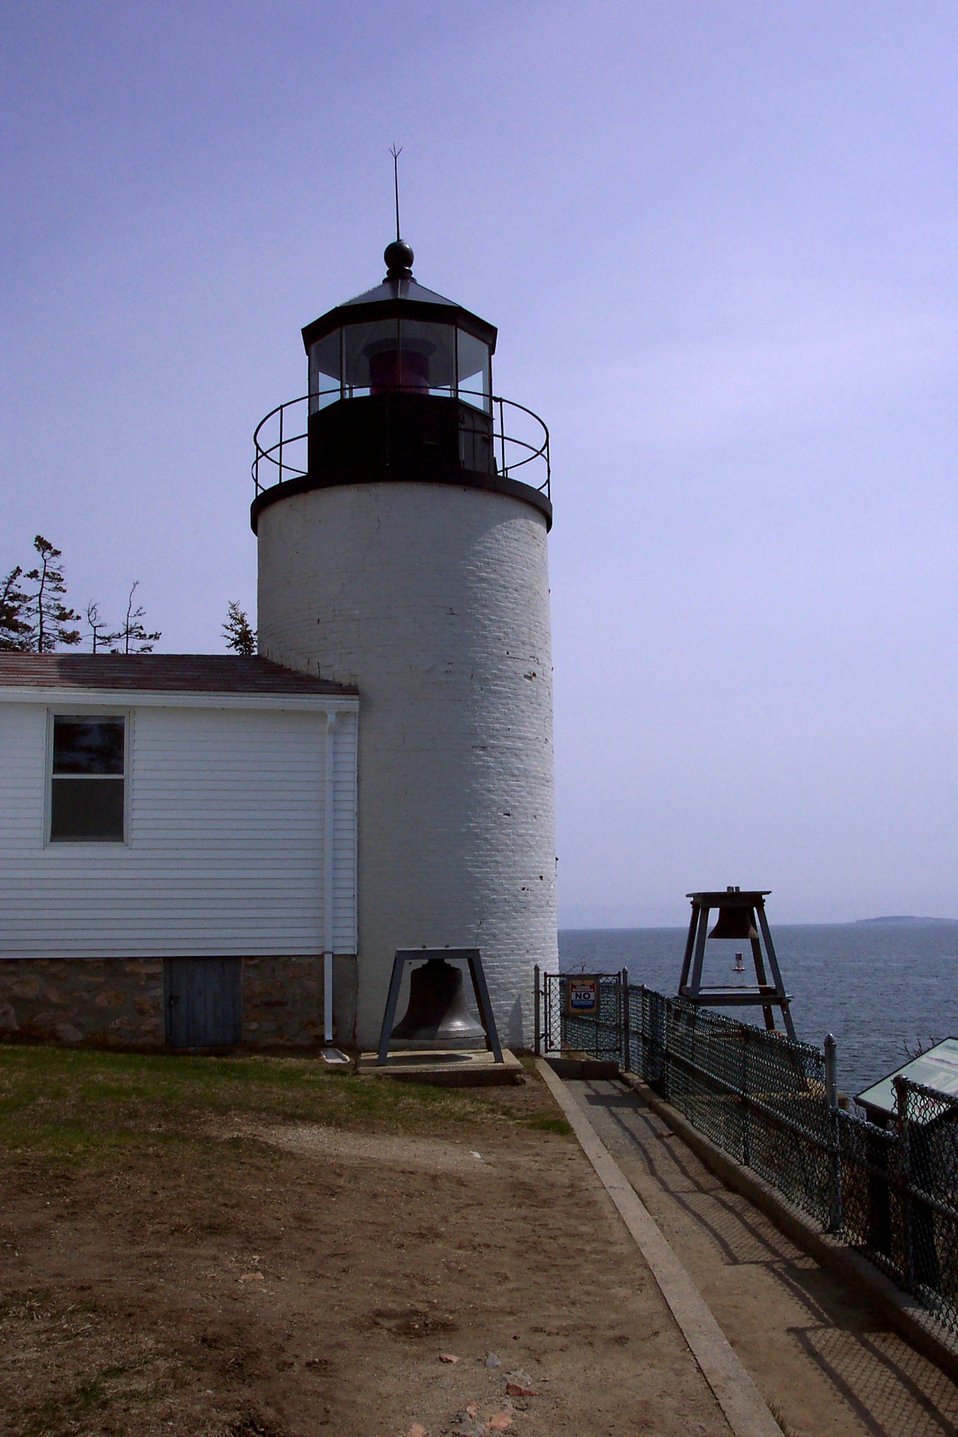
Bass Harbor Head Lighthouse with old fog bell as seen looking east from its west side.